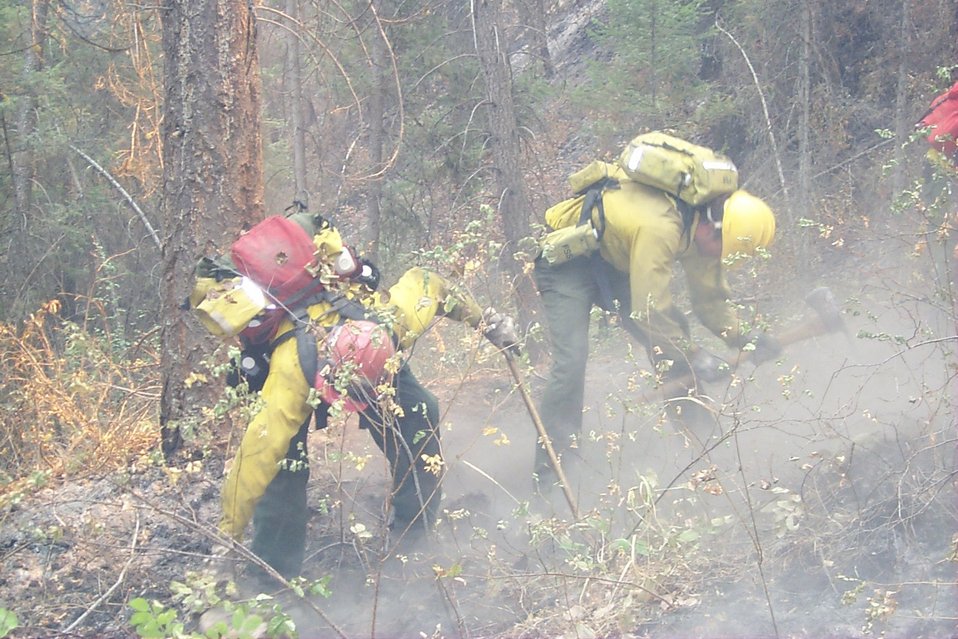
Line crew Fire Clearwater Fire Salmon Field Office USRD Upper Snake River District Fire Fighters